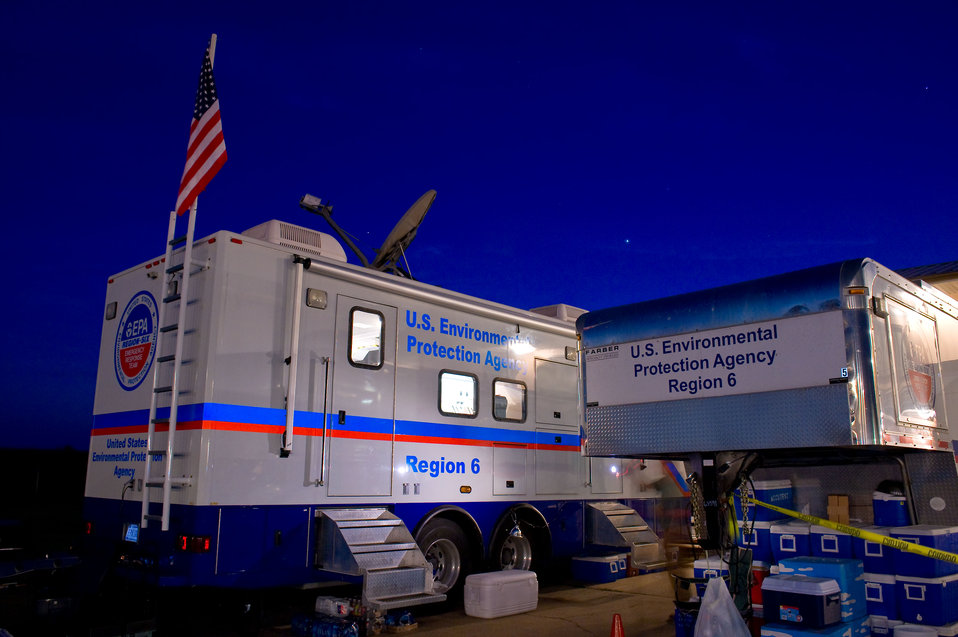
EPA Mobile Command Post keeps tabs on monitoring and sampling efforts in the field.

May 11, 2010. Region 6 Mobile Command Post deployed to Venice, LA.